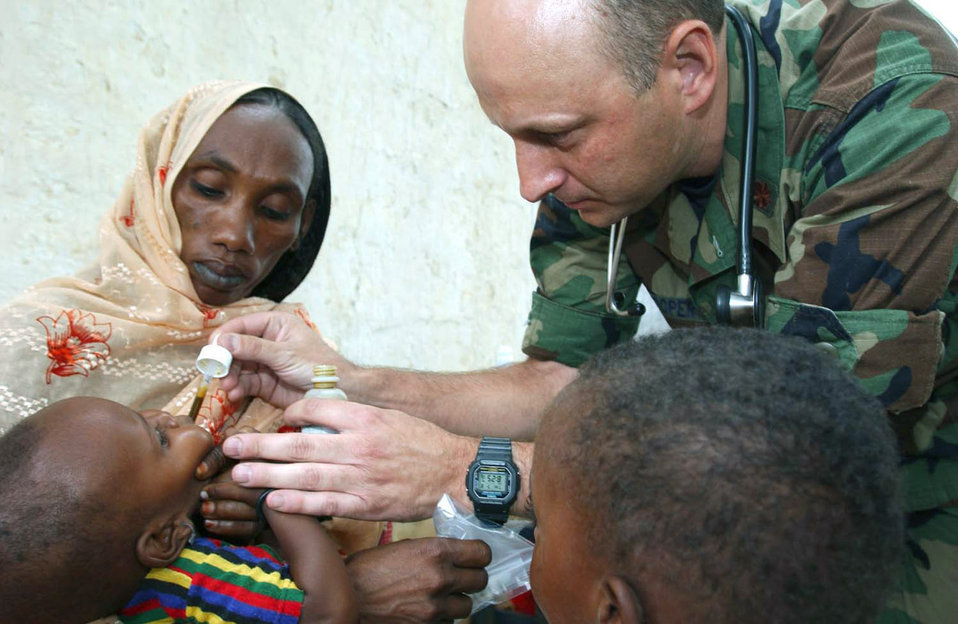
Reservists provide humanitarian aid in Chad

CAMP LOUMIA, Chad -- Maj. Mike Cooper gives a Chadian baby medication while on a humanitarian mission here. He is a physician assistant with the 445th Aerospace Medical Squadron at Wright -Patterson Air Force Base, Ohio. The medical team treated more than 2,800 patients and issued 500 pairs of donated eye glasses.